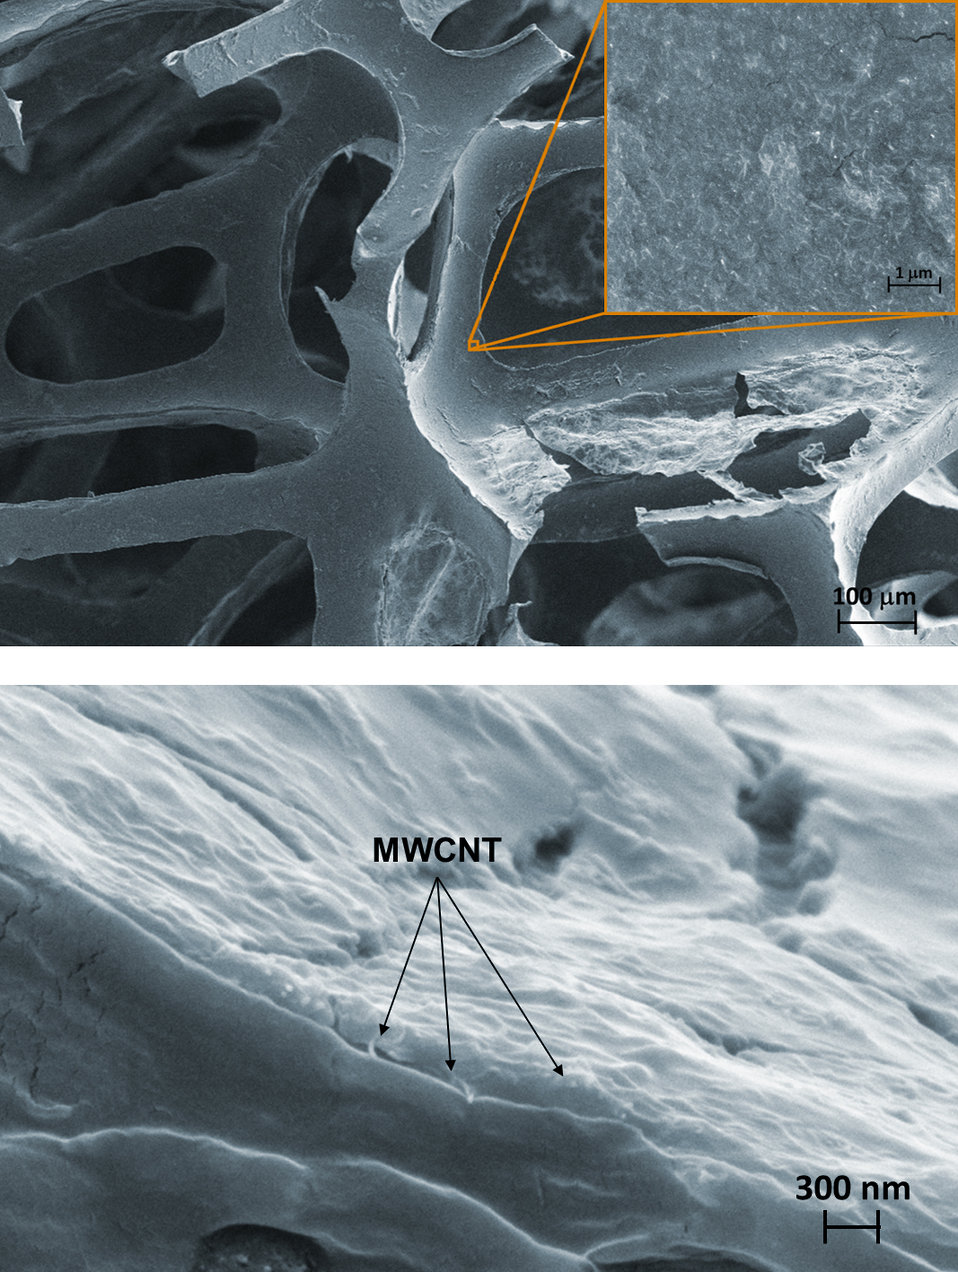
Nanotubes Promise Improved Flame-Resistant Coating

An easy-to-apply, NIST-developed coating significantly reduces the flammability of foam used in furniture. The thin coating is deposited onto the surface of all the nooks and crannies of the porous foam (top), with heat-dissipating multiwalled carbon nanotubes (MWCNT) uniformly distributed throughout (bottom). (Color added for clarity.)